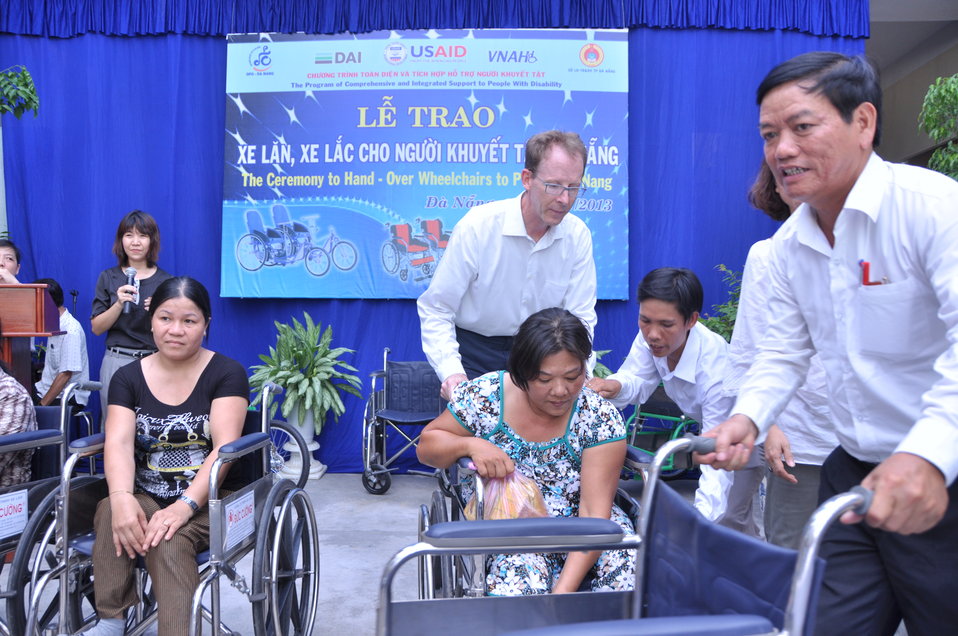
USAID Project Supports Rehabilitation Department for Children and Wheelchair Distribution in Danang

Beneficiaries in Danang, Vietnam, receive wheelchairs.